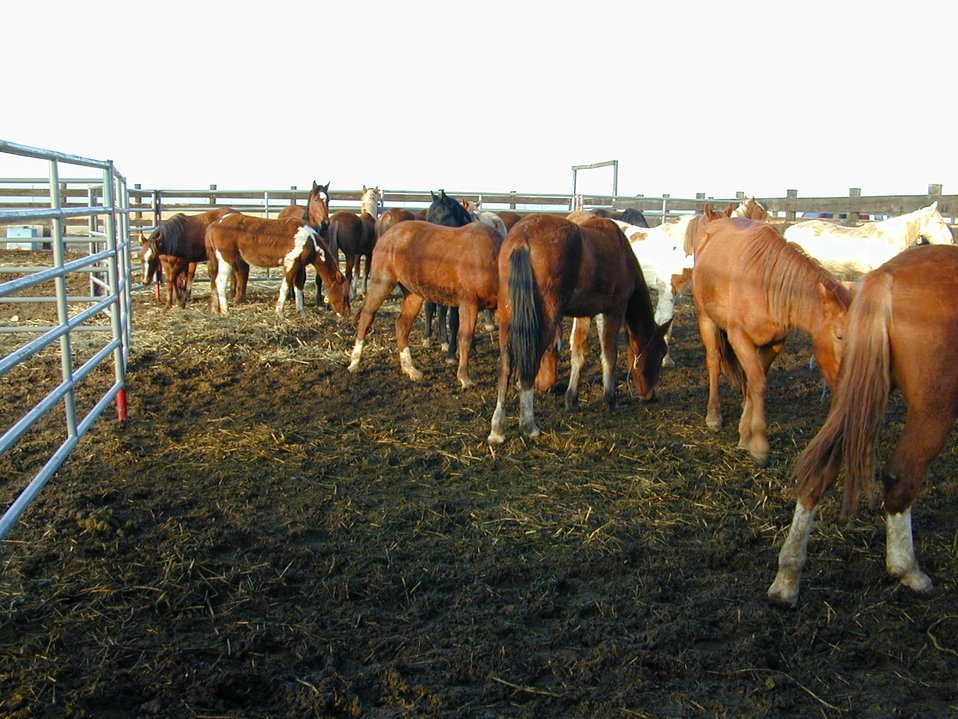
Wild Horse and Burro Adoption